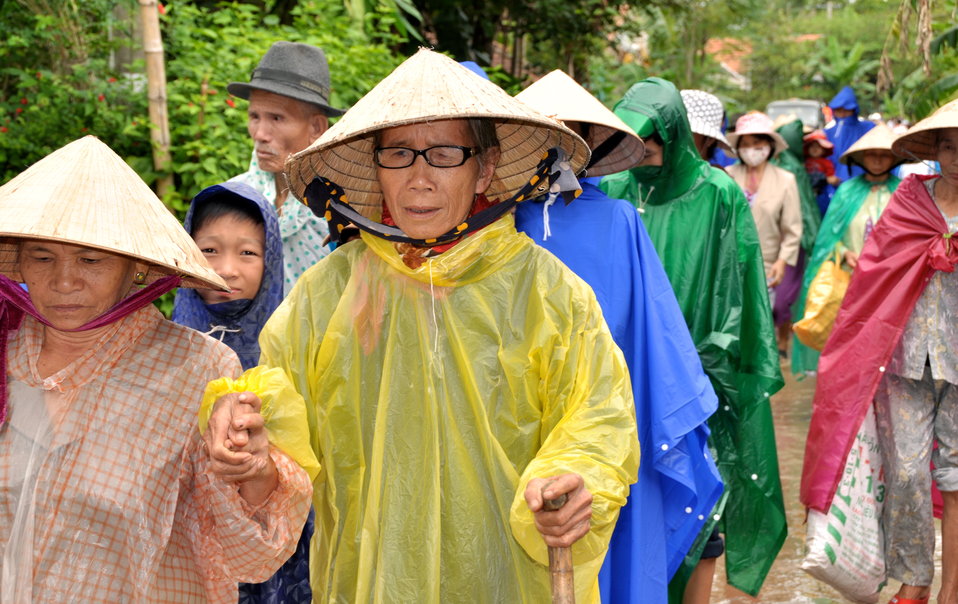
USAID and Save the Children support community evacuation drill and emergency preparedness in central Vietnam

Loc An Commune, Phu Loc District, Thua Thien Hue Province
December 4, 2012, Photo: Richard Nyberg, @USAIDVietnam